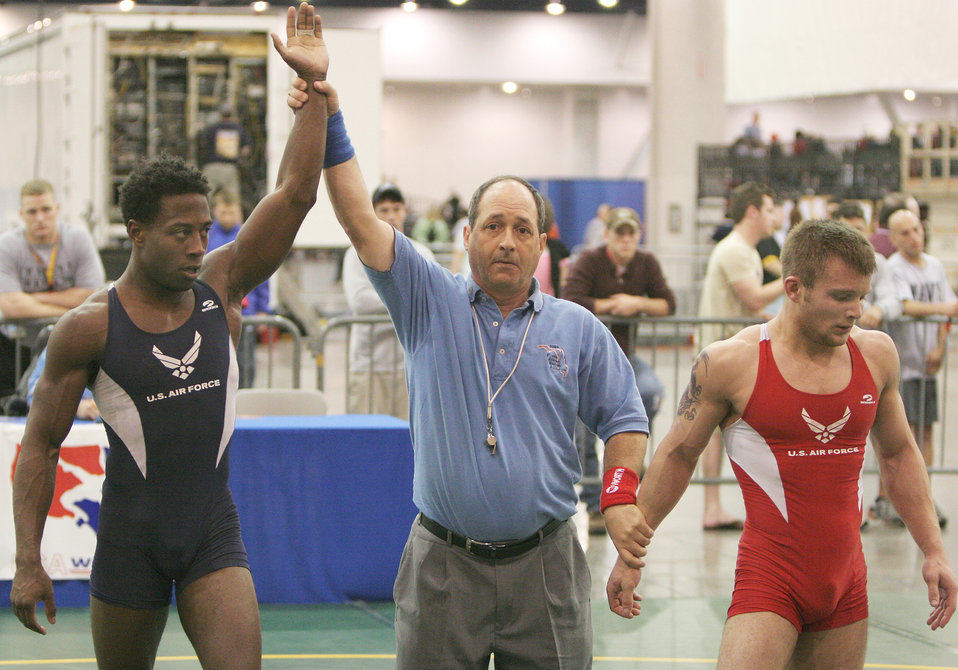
Air Force wrestlers compete in Las Vegas tourney

Capt. Anthony Brooker is declared the winner over his opponent and fellow teammate Senior Airman Jared Moreland at the USA National Senior Men's and Women's Wrestling Championships in Las Vegas on Saturday, April 15, 2006. Captain Brooker finished seventh overall. He is stationed at Vandenberg Air Force Base, Calif., and Airman Moreland is at Cannon AFB, N.M.